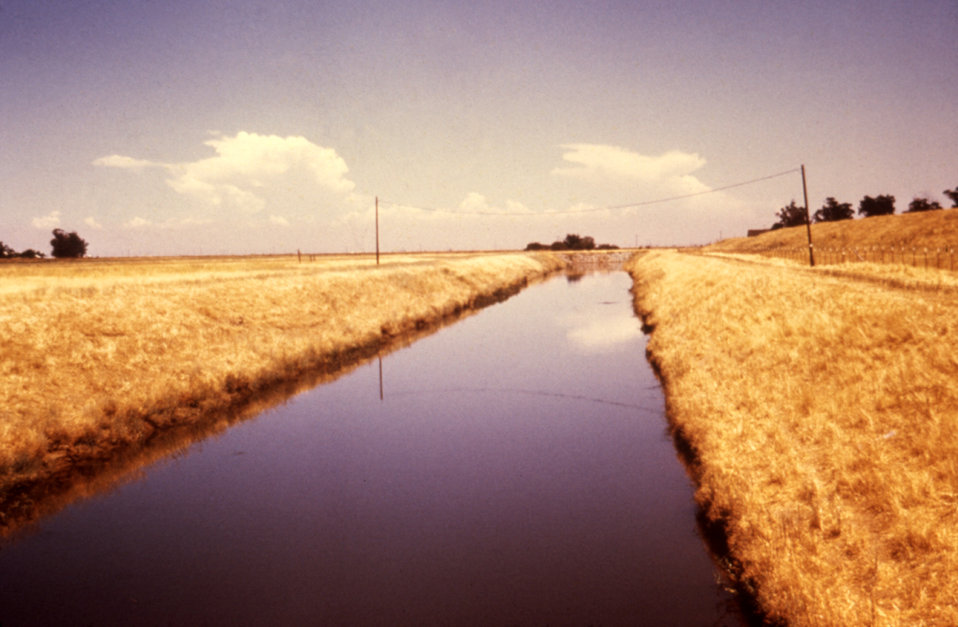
This drainage canal has been cleaned after having been choked off due to debris and overgrown plant life, which is essential to keeping such water collections free of insect disease vectors such as mosquitoes, as well as flowing freely.